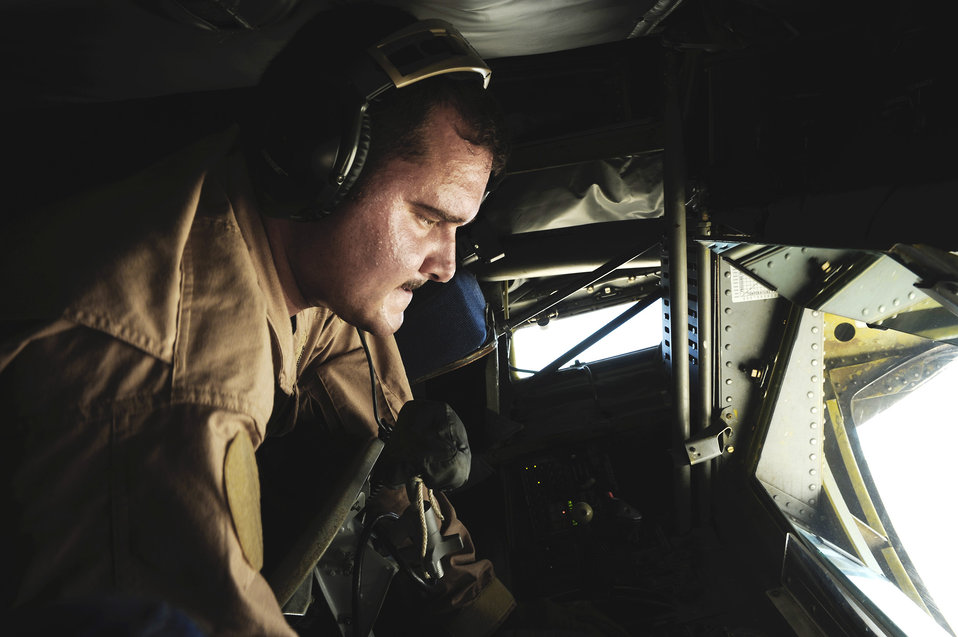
Refueling operations over Iraq

Boom operator Staff Sgt. Jon Adams inspects the boom controls on a KC-135 Stratotanker in Southwest Asia. He is assigned to the 340th Expeditionary Air Refueling Squadron.